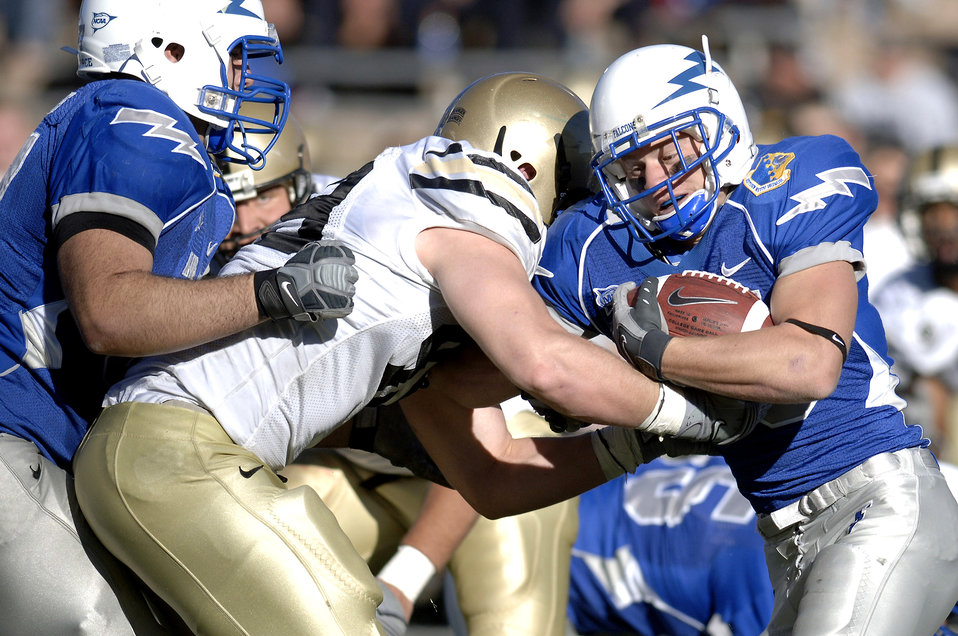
Football: Falcons ride record-breaker Hall over Army

Falcon tailback Jim Ollis is met head on by an Army defender during Air Force's 30-10 win over the Black Knights Nov. 3 at Falcon Stadium in Colorado. Ollis carried eight times for 31 yards as the bluesuiters reeled off 542 yards in total offense.